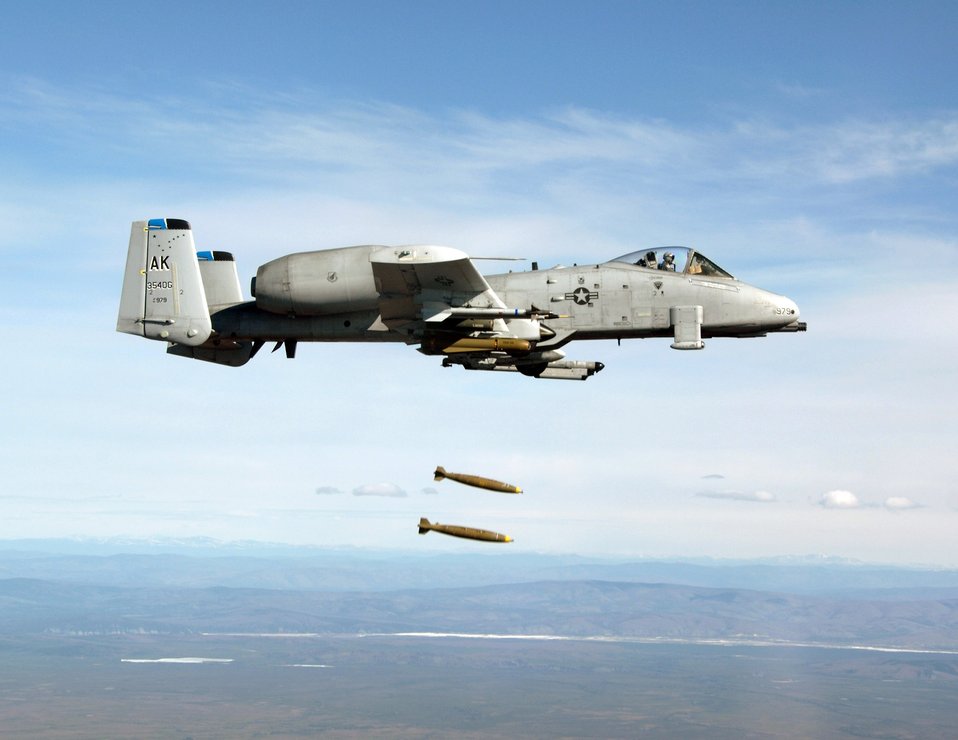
Thunder and lightning

Capt. Will Reynolds drops Mk-82 bombs from an A-10 Thunderbolt II over the Pacific Alaska Range Complex April 24 during live-fire training. Captain Reynolds is an A-10 pilot from the 355th Fighter Squadron from Eielson Air Force Base, Alaska. Members from the 355th FS are tasked to provide mission ready A-10s and a search and rescue capability, in Alaska and deployed sites worldwide.